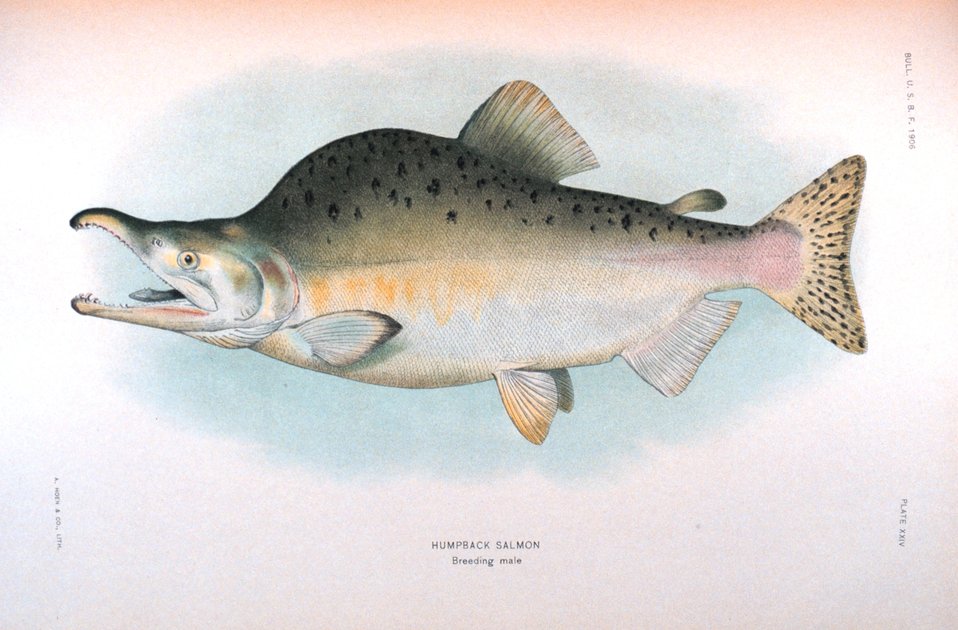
Humpback salmon, breeding male. In: 'The Fishes of Alaska.' Bulletin of the Bureau of Fisheries, Vol. XXVI, 1906. P. 360, Plate XXIV.